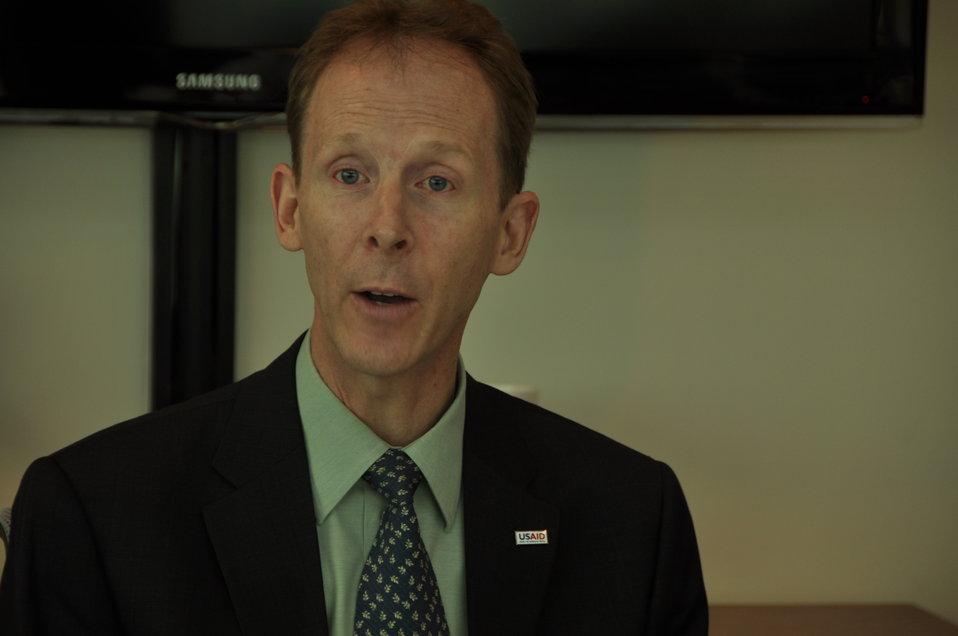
USAID Mission Director Joakim Parker announces climate change awards

October 17, 2012